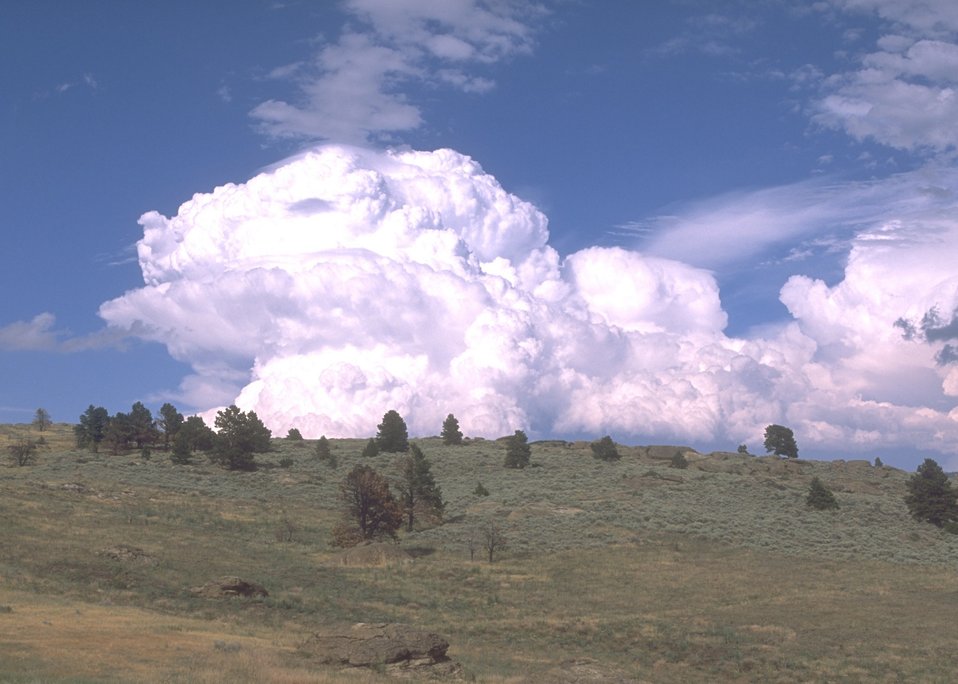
Thunder head and burned over area in Jackson Canyon Area, Casper Field Office.